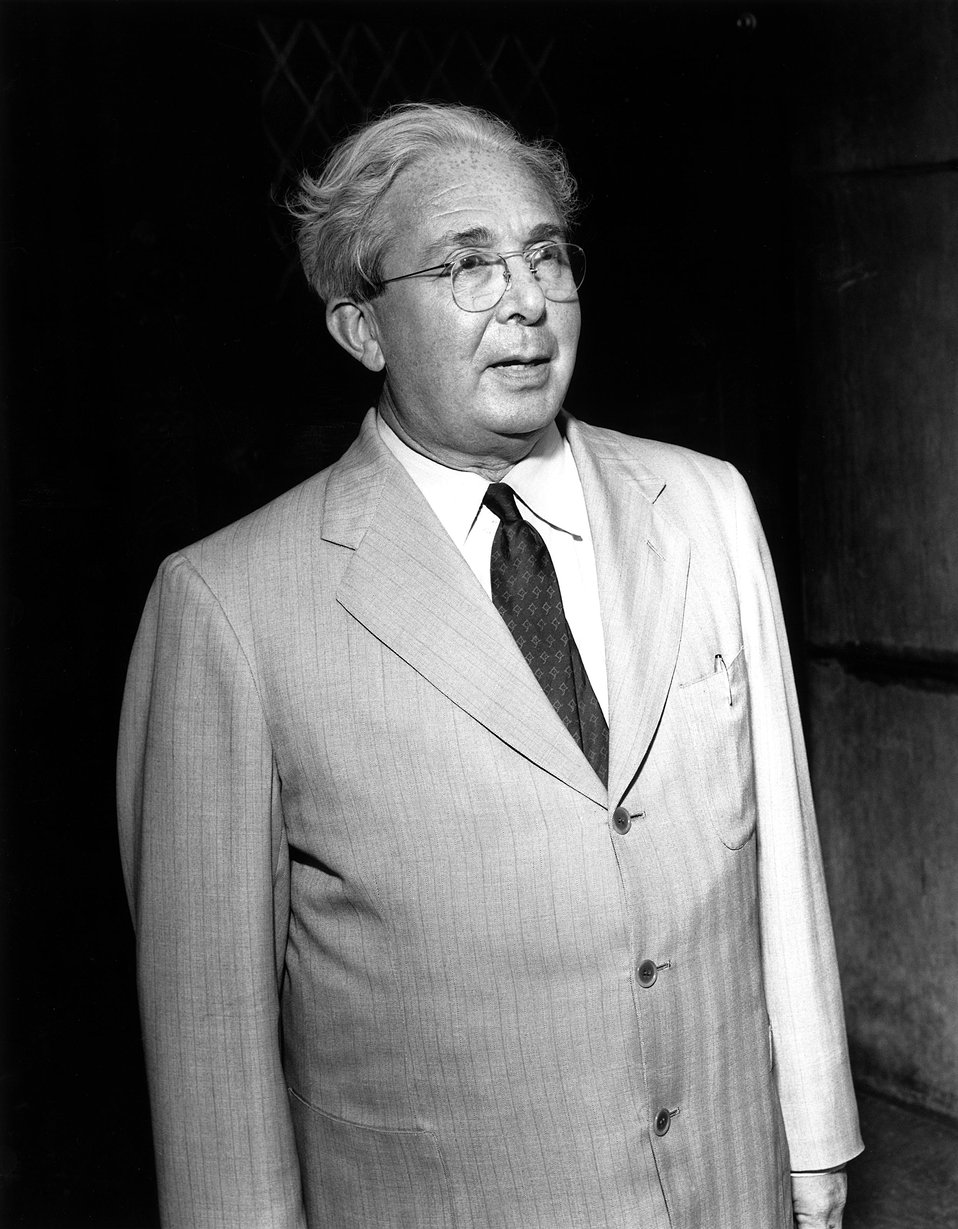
Leo Szilard.